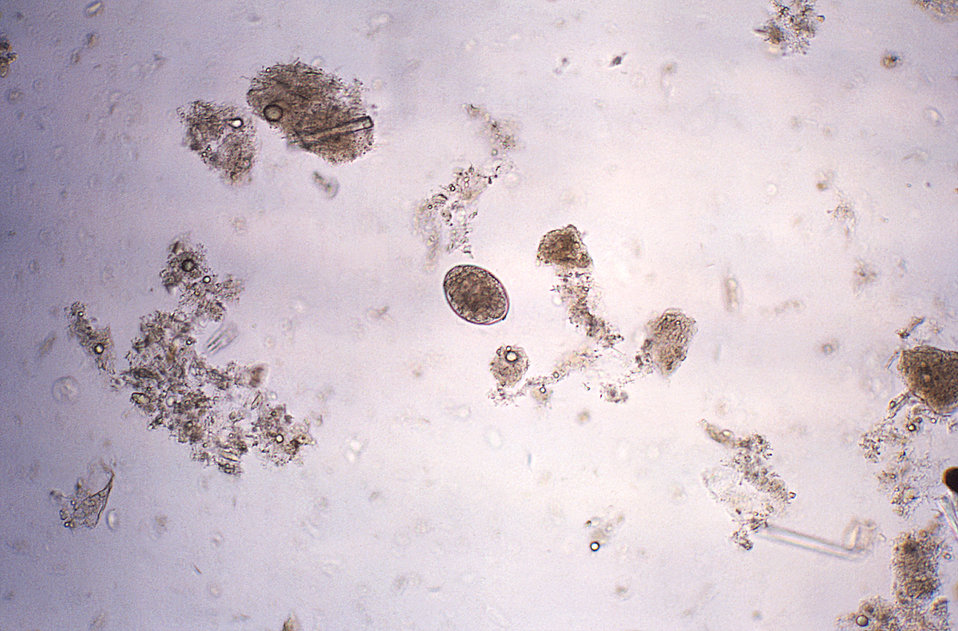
Magnified 128X, this photomicrograph revealed the presence of a cestode, Diphyllobothrium latum, or 'fish' or 'broad' tapeworm, egg, which is described as oval or ellipsoidal, and ranges in size from 55�m to 75�m X 40�m to 50�m. There is an operculum at one end that can be inconspicuous, and at the opposite (abopercular) end is a small knob that can be barely discernible. The eggs are passed in the stool unembryonated.